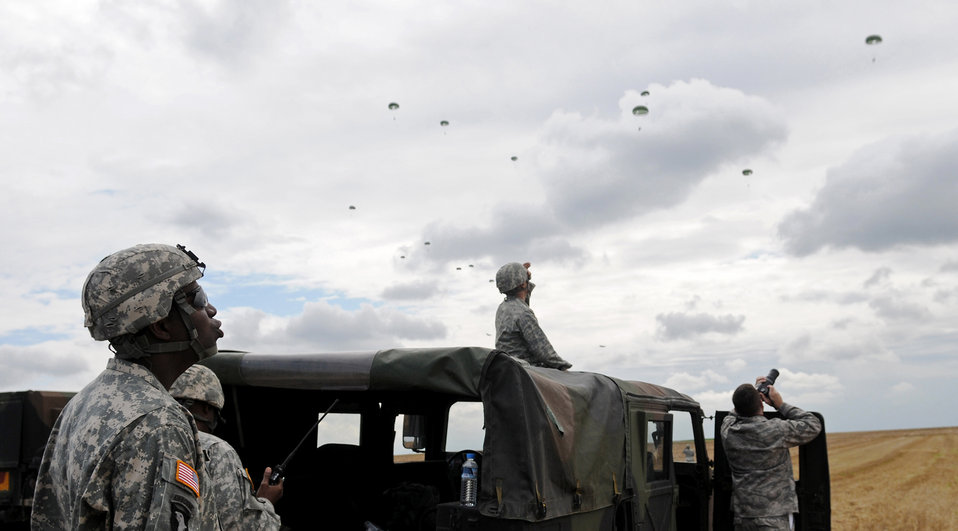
5 NATO countries take part in jump week

U.S. Forces along with German, Italian, Belgium and Dutch army parachute over the Bunker drop zone Aug. 13 in southwestern, Germany. U.S. soldiers and Airmen performed a combined airborne drop with four other NATO countries.